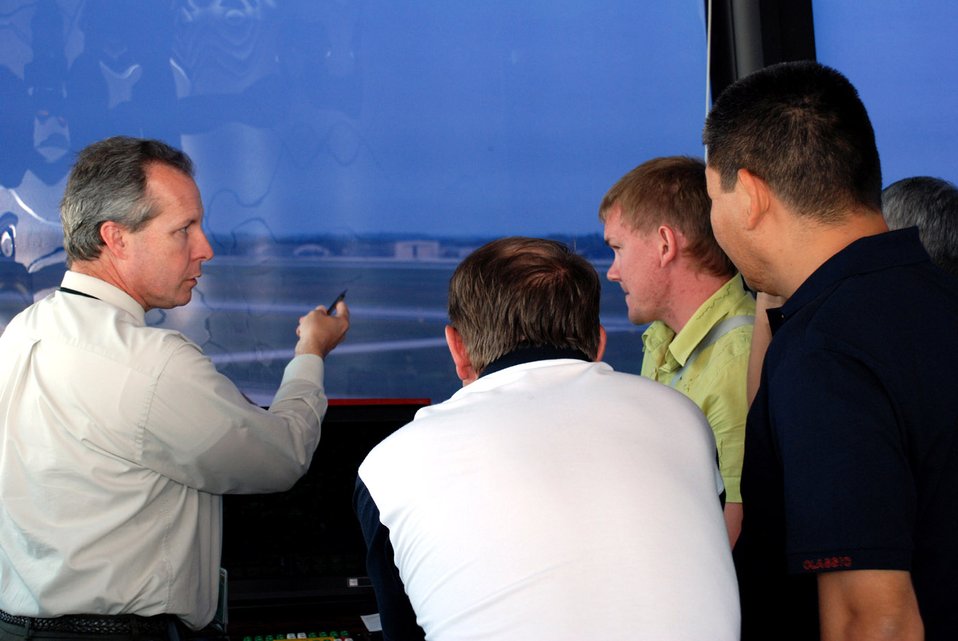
Kyrgyz controllers see stateside air traffic operations

David Maddox explains the layout of the airfield to Igor Kulik, Taalaibek Alisherov, and Lev Semenovykh Sept. 6 at Andrews Air Force Base, Md. Mr. Maddox is the Federal Aviation Administration shift manager responsible for tower operations at Andrews AFB. The Kyrgyz air traffic controllers visited Andrews AFB and several other facilities in Virginia and Mississippi as part of a two-week orientation sponsored by U.S. Central Air Forces. The trip is part of an ongoing education and exchange program between Kyrgyz air navigation and the 376th Expeditionary Operations Support Squadron at Manas Air Base, Kyrgyzstan. The two organizations work closely together because the base is collocated with Manas International Airport.